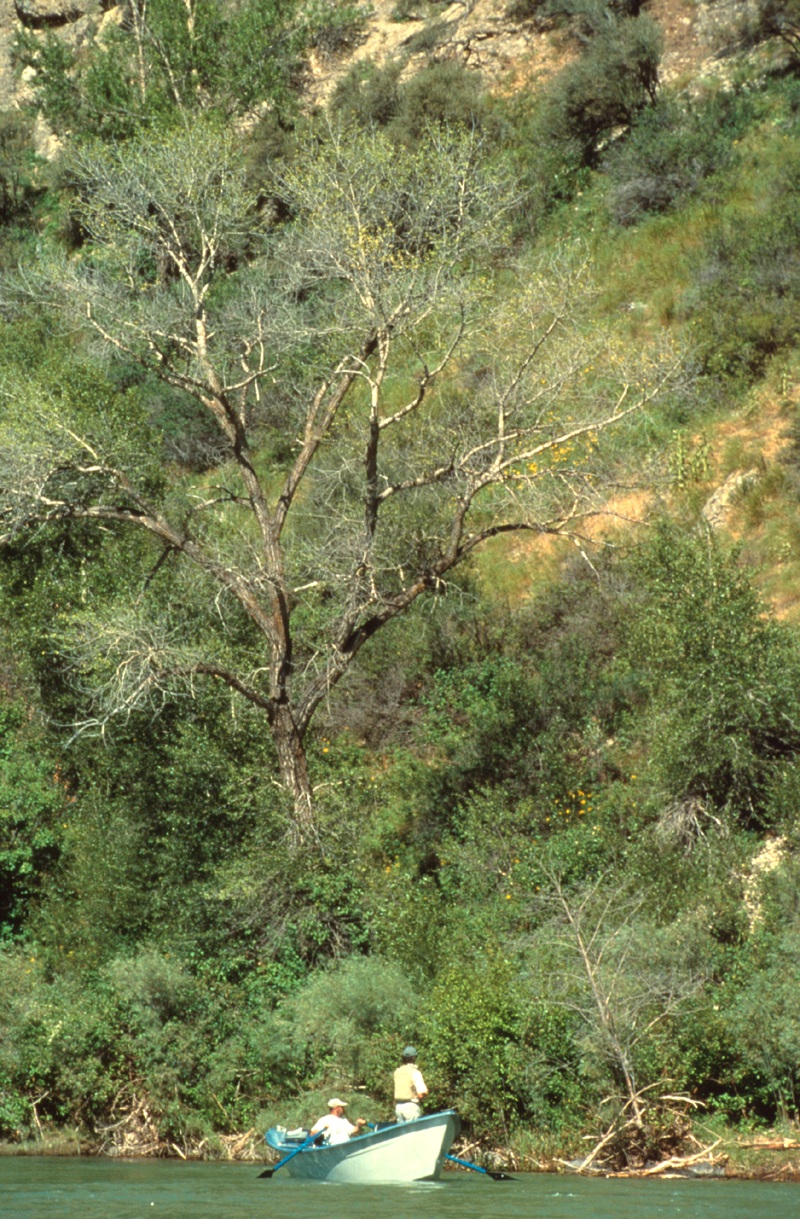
South Fork of the Snake River